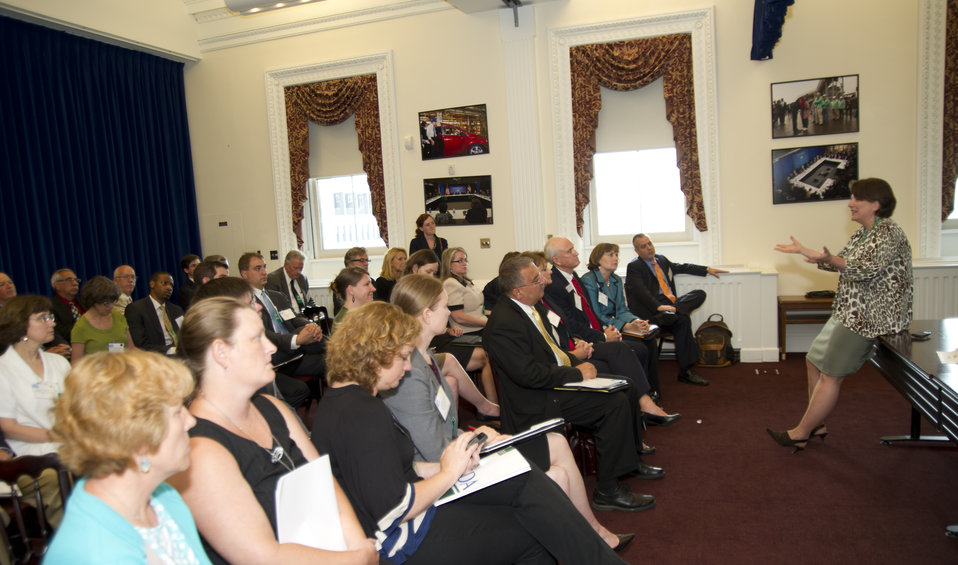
Deputy Agriculture Secretary Kathleen Merrigan speaks to the White House Forum on Regional Innovation in Rural America at the White House, Eisenhower Executive Office Building in Washington, D.C., on Wednesday, June 13, 2012.